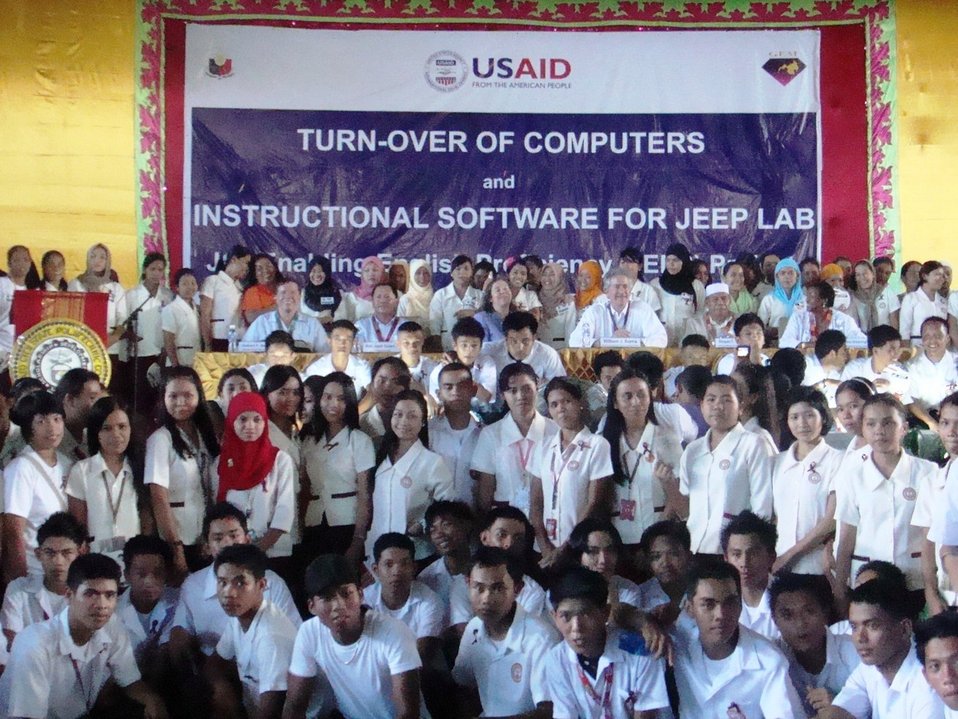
Under Secretary Burns and Filipino Youth Smile for a Photo

U.S. Under Secretary William J. Burns and Filipino youth who participate in a USAID-funded project smile for a photo in Cotabato, Mindanao, Philippines, on July 21, 2010.